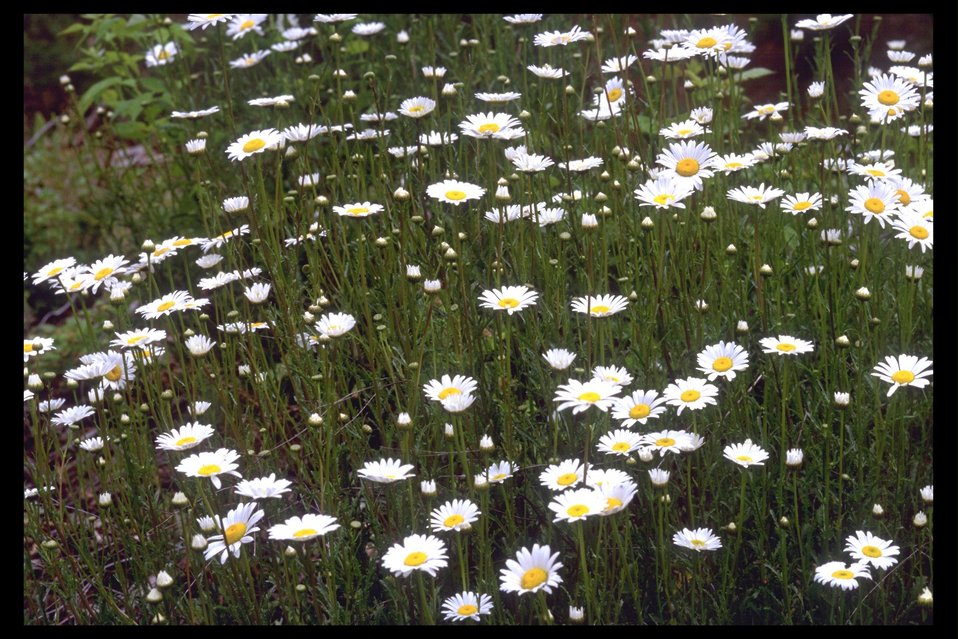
Oxeye Daisy (Chrysanthemum leucanthemum) along the West Fork Trail Creek.